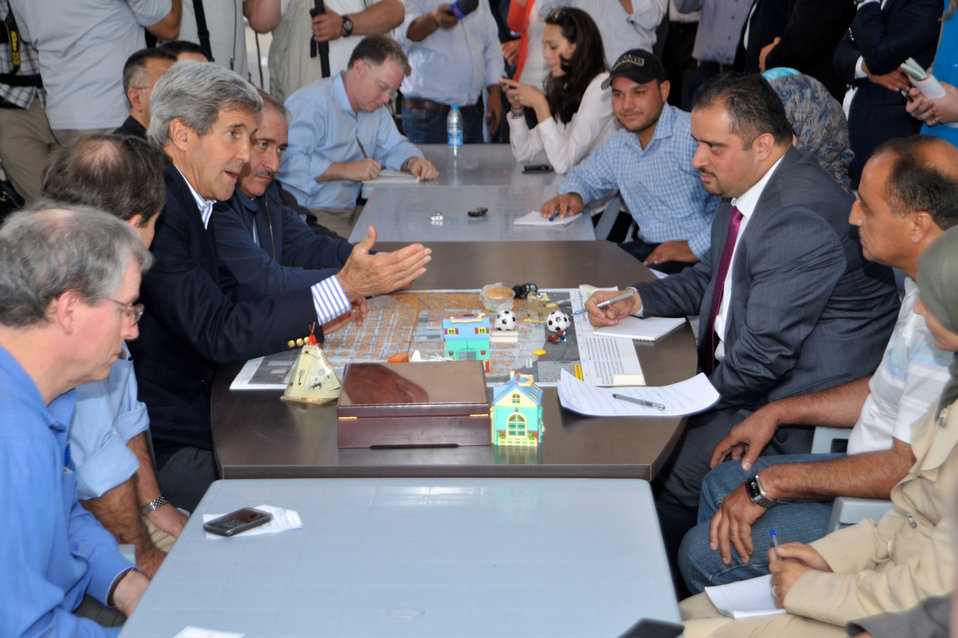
Secretary Kerry Speaks With Syrian Refugees at the Za'atri Refugee Camp

U.S. Secretary of State John Kerry speaks to a group of Syrian refugees as he visits the Za'atri camp in Jordan, where they are living, on July 18, 2013.